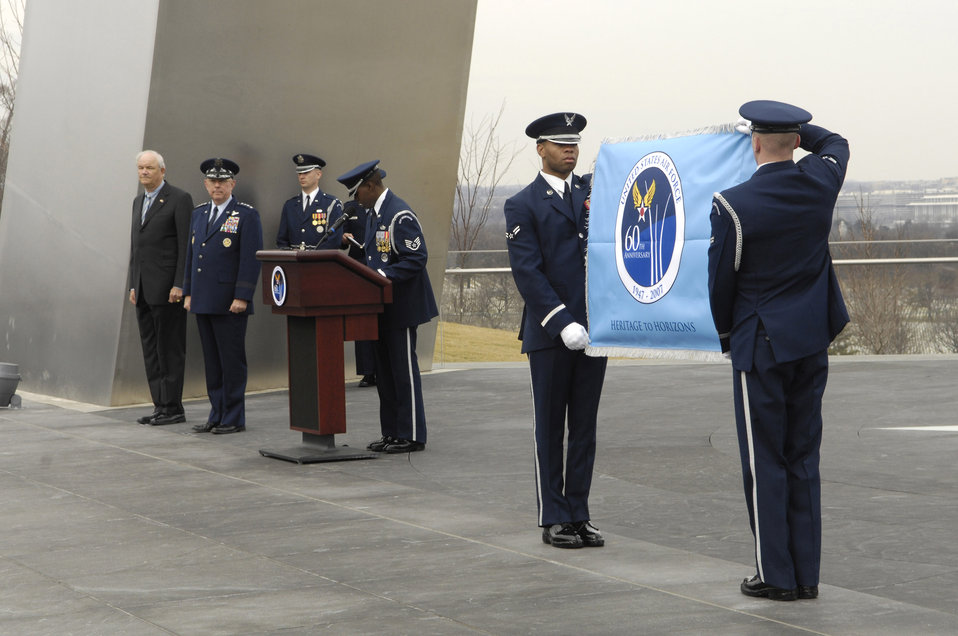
Air Force 60th Anniversary flag raised at memorial

Secretary of the Air Force Michael W. Wynne and Air Force Chief of Staff Gen. T. Michael Moseley observe as Airmen from the U.S. Air Force Honor Guard display the Air Force's 60th Anniversary flag during a ceremony at the Air Force Memorial March 1 in Arlington, Va. The flag will fly at the memorial until the Air Force's 60th birthday Sept. 18.